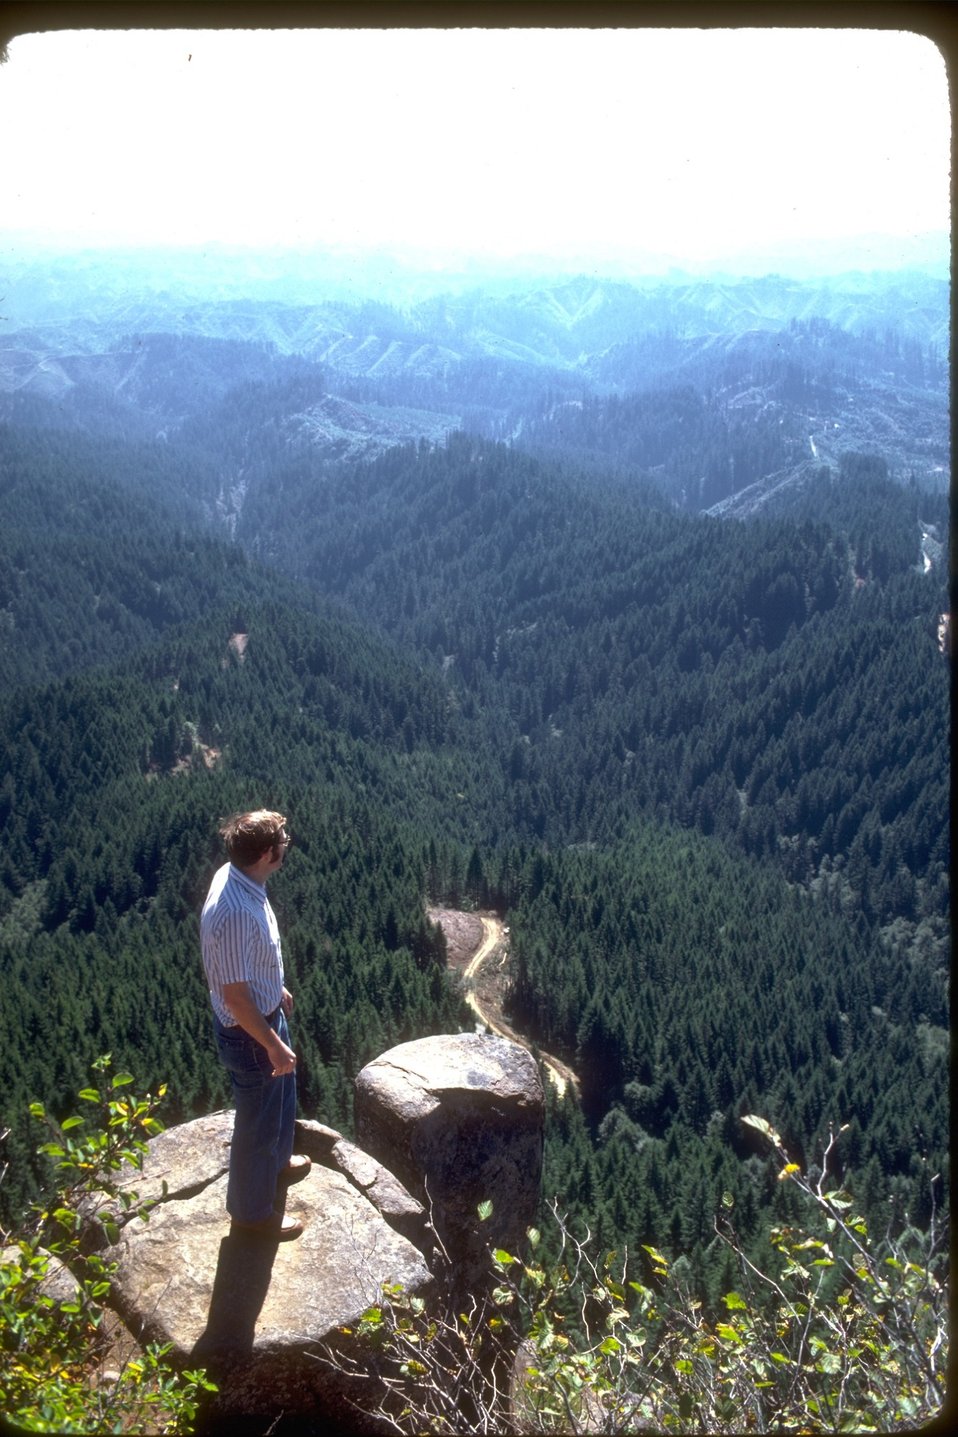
Hiker at Eagles Rest View.